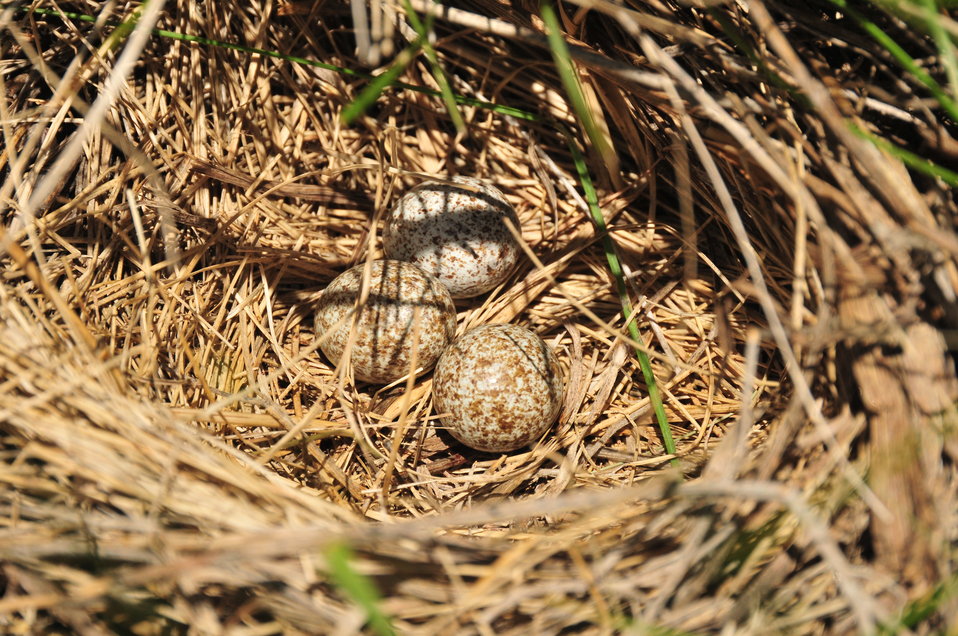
Western Meadowlark Nest

A western Meadowlark nest in native prairie on Sand Lake WMD.